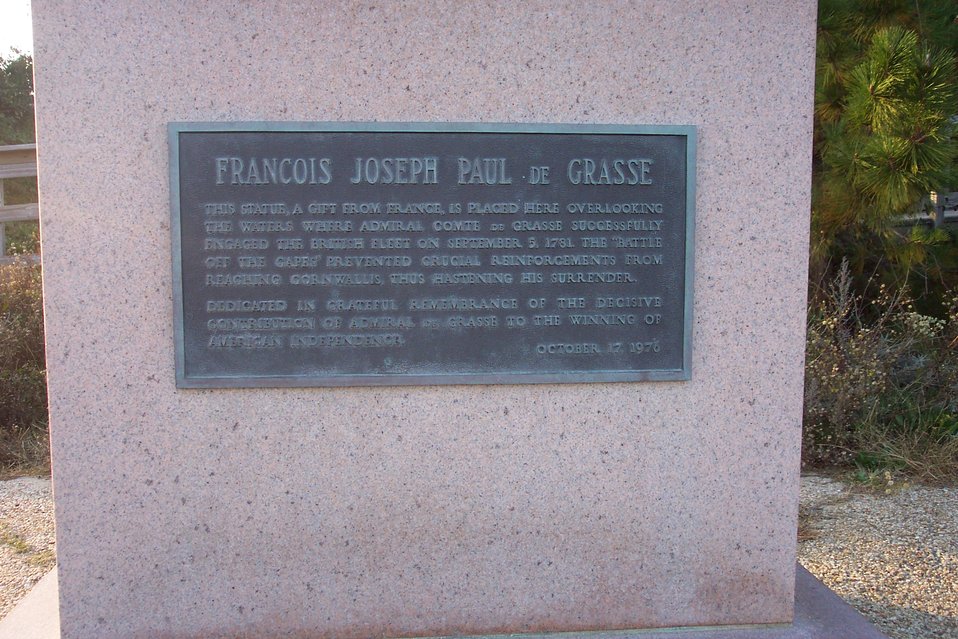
Memorial to Admiral Comte de Grasse, a gift from France. De Grasse successfully bottled up the British at Yorktown allowing Washington to defeat General Cornwallis effectively ending the American Revolutionary War. This monument was given during our Bi-Centennial year.